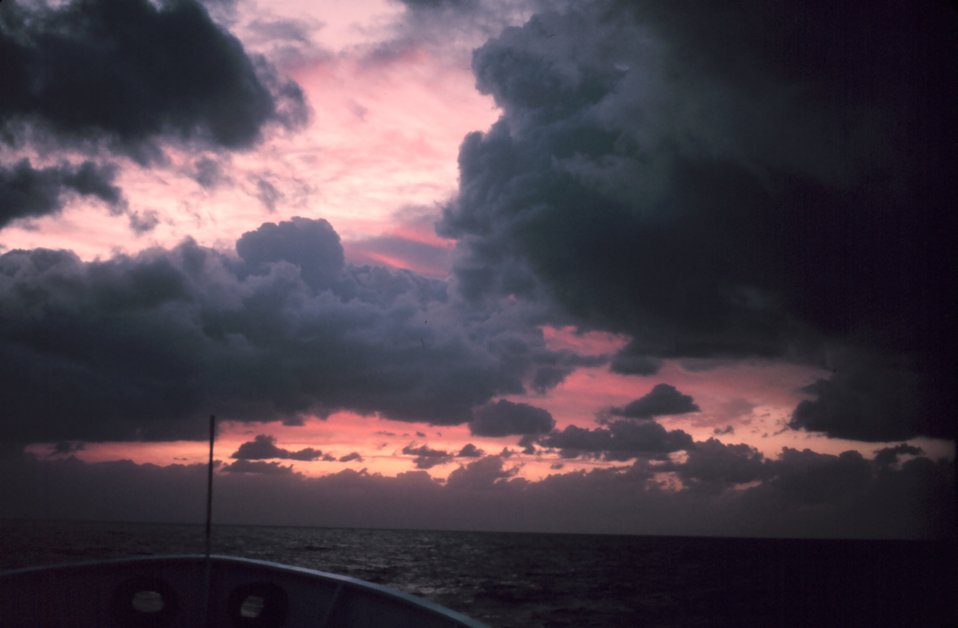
The bow of the NOAA Ship ALBATROSS IV heading towards the rising sun.